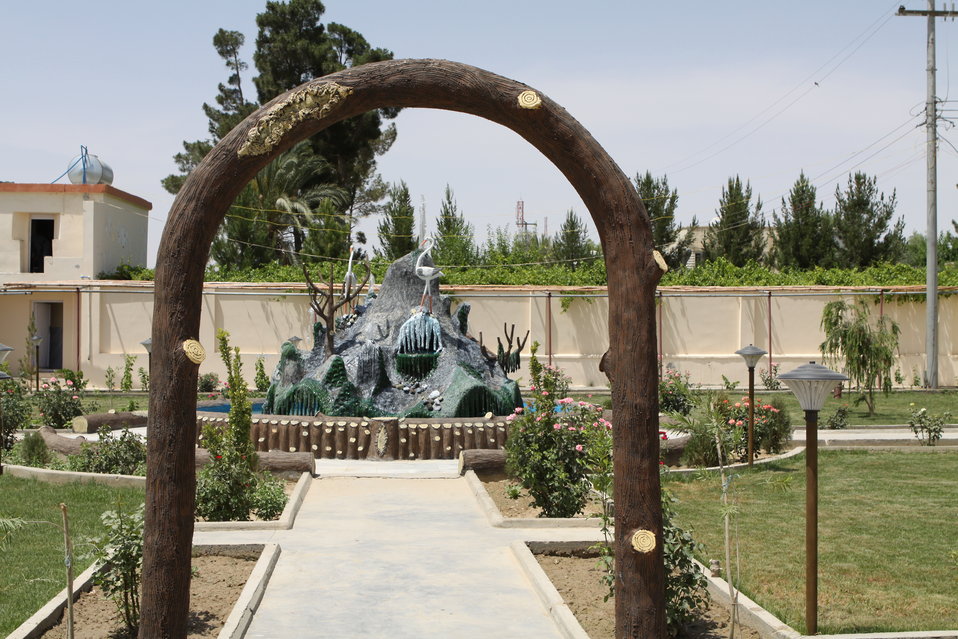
Bolan Poultry Farm